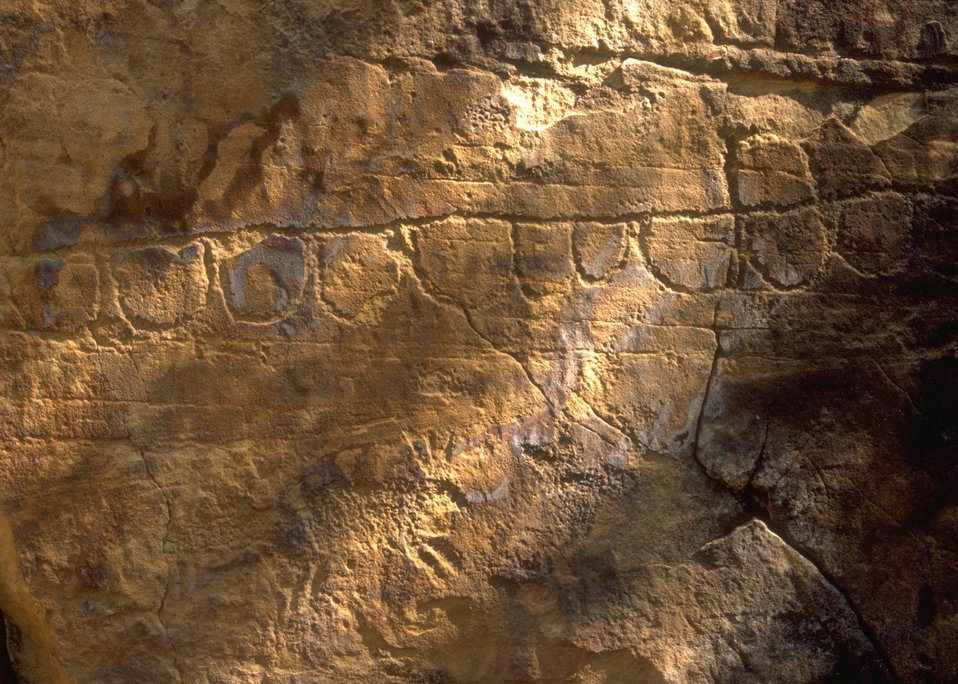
Petroglyph panel in Whoopup Canyon, Newcastle Field Office.